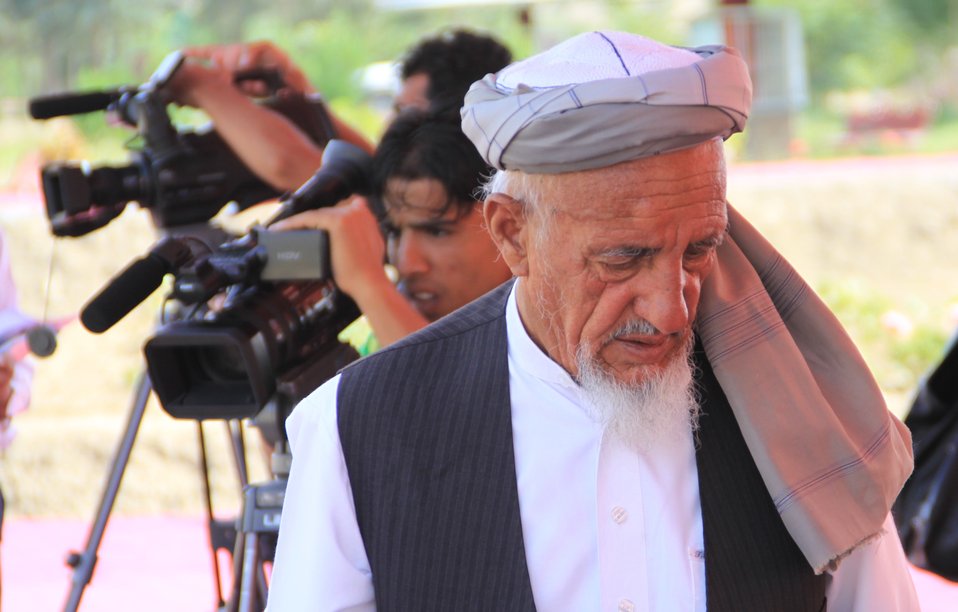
Badam Bagh Farm